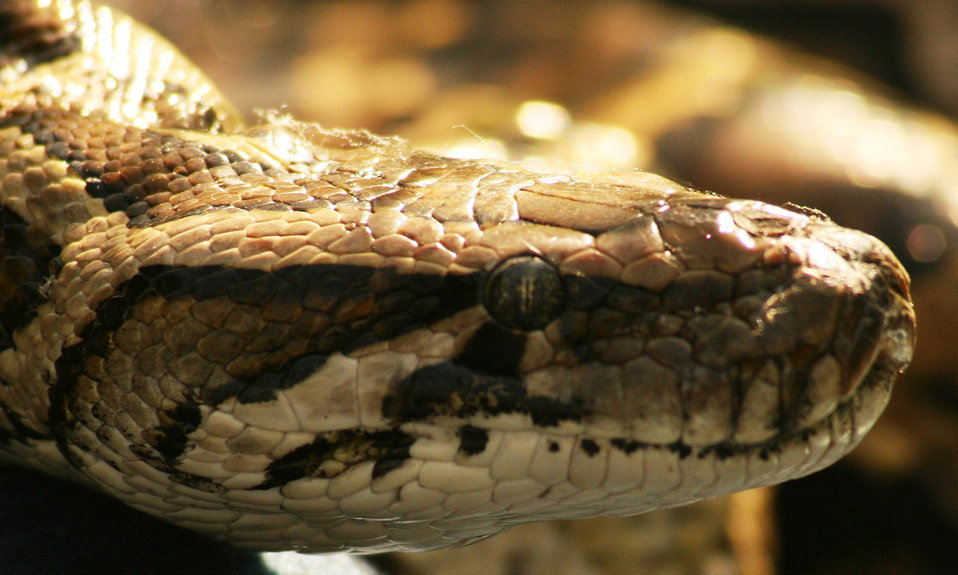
Invasive Burmese pythons have made a home in Florida, where they compete with and feed on native wildlife. The U.S. Department of Agriculture (USDA) Animal Plant Health and Inspection Service (APHIS) Wildlife Services (WS) researchers have developed several new tools, including a live trap and a monitoring method using environmental DNA, to help control the snakes.